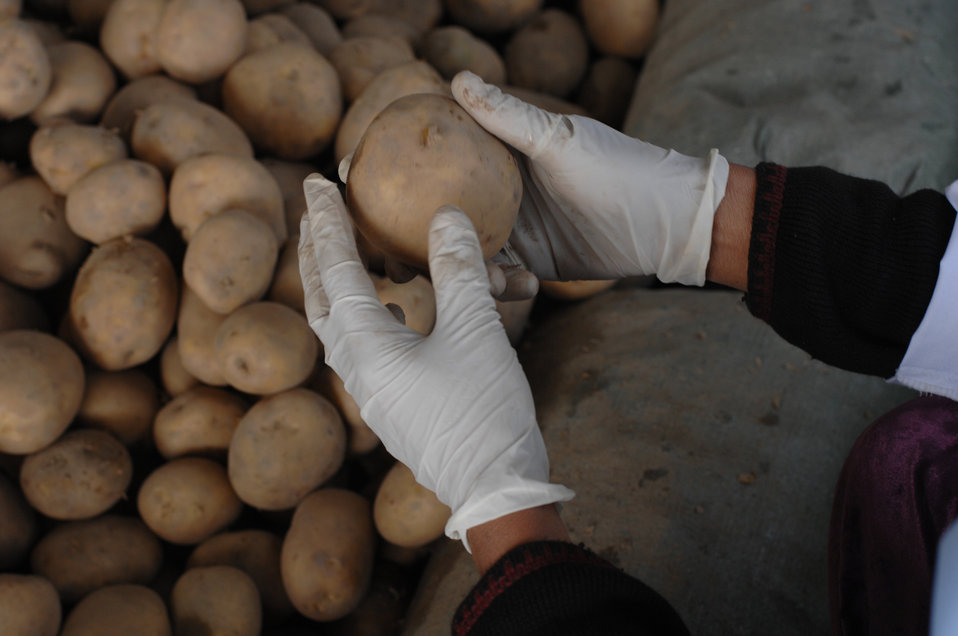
Shah

A female worker sorts and grades potatoes at the Surkh Rod vegetable packing facility in Nangarhar province on Wednesday, February 9, 2011. (S.K. Vemmer/Department of State)